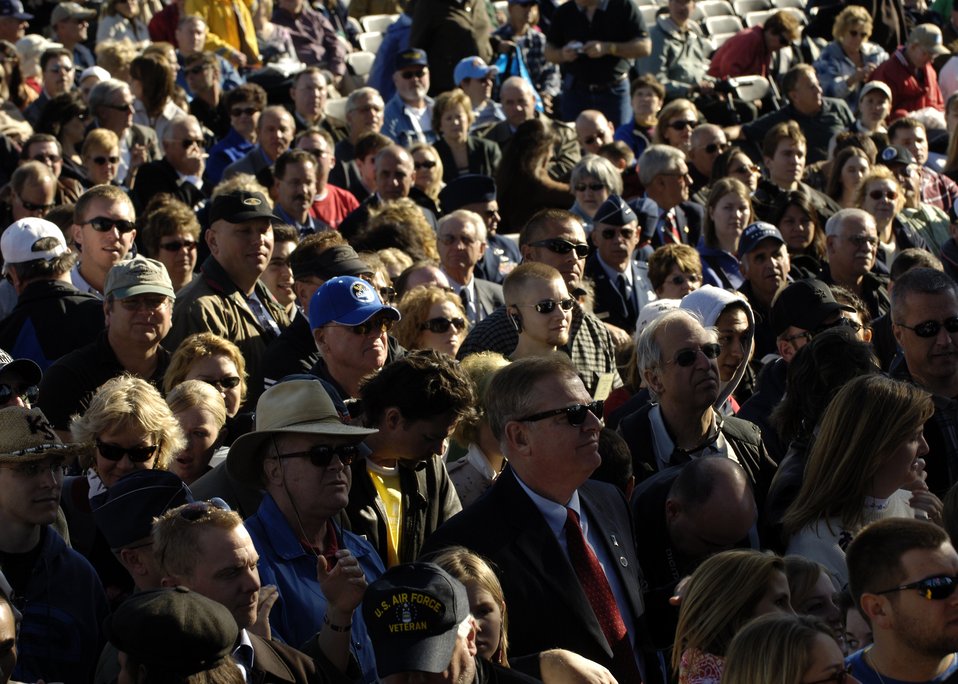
Crowd at Lee Ann Womack concert

The crowd watces as country music star Lee Ann Womack performs at the Air Force open house at the Pentagon on Saturday, Oct. 14, 2006. The concert followed the official dedication ceremony of the Air Force Memorial.